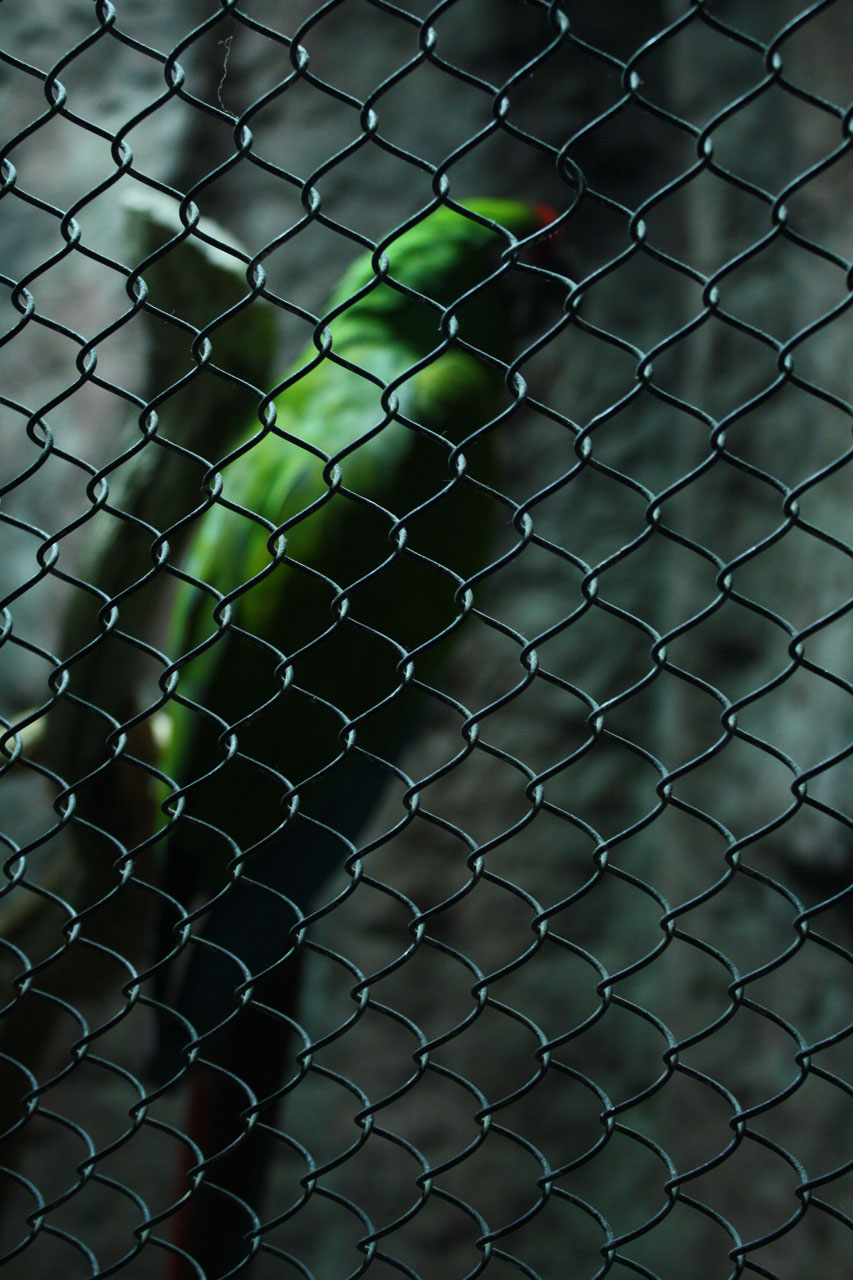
Bird in cage

Bird (macaw i believe) in a cage, focusing on the cage (could be used as a statement on bird captivity).